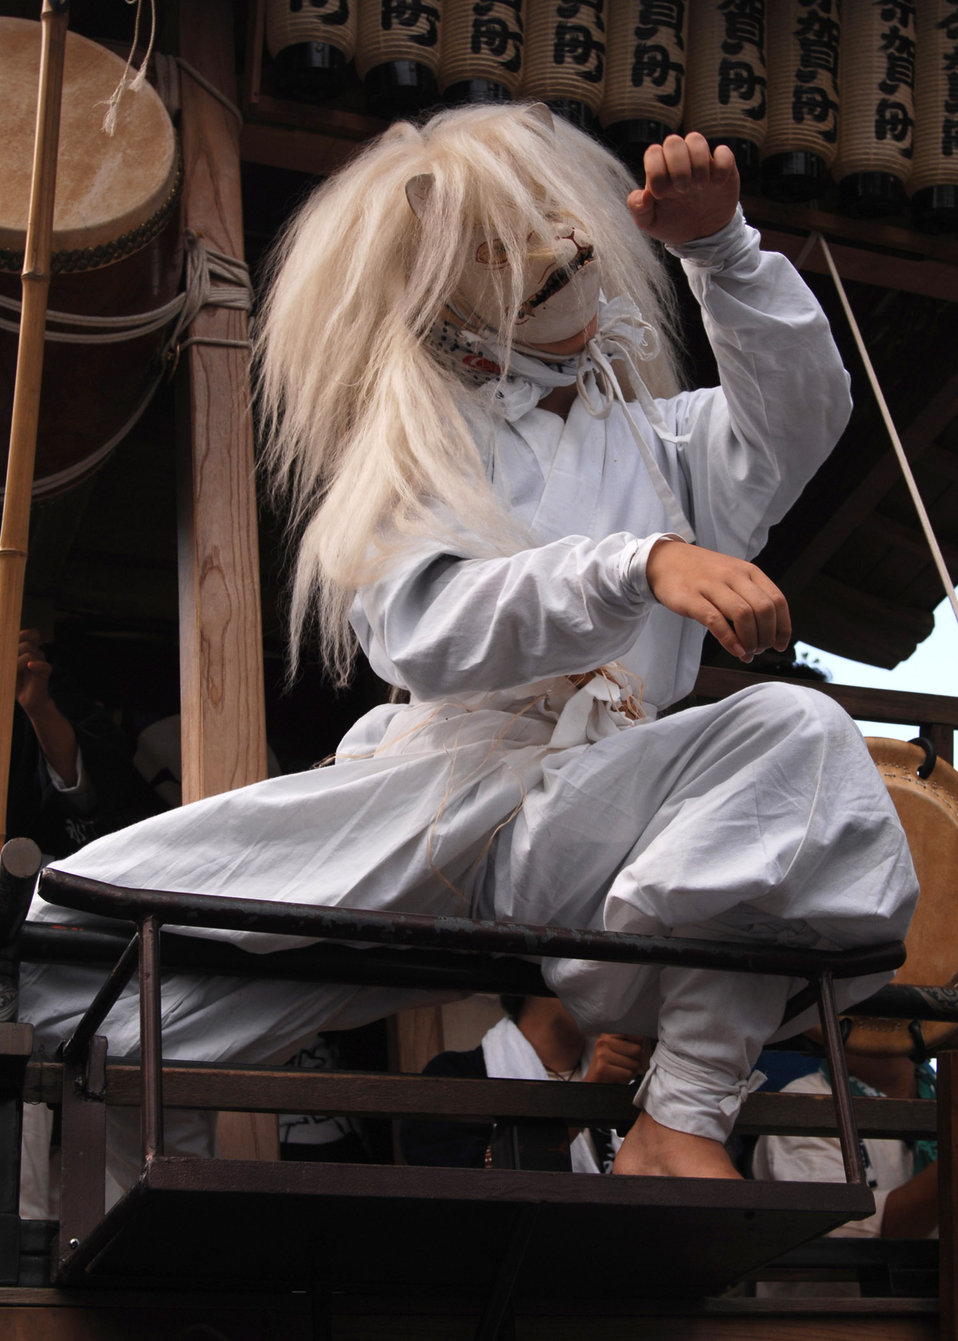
Yokota Airmen participate in Japanese festival

A performer plays a fox during the Fussa Tanabata Festival Aug. 8 at Fusa City, Japan. The festival included performances of traditional Japanese dancing and the carrying of shrines from Shinmeisya Shrine to Fussa City Hall. Members of Yokota Air Base, Japan, participated in the festival.